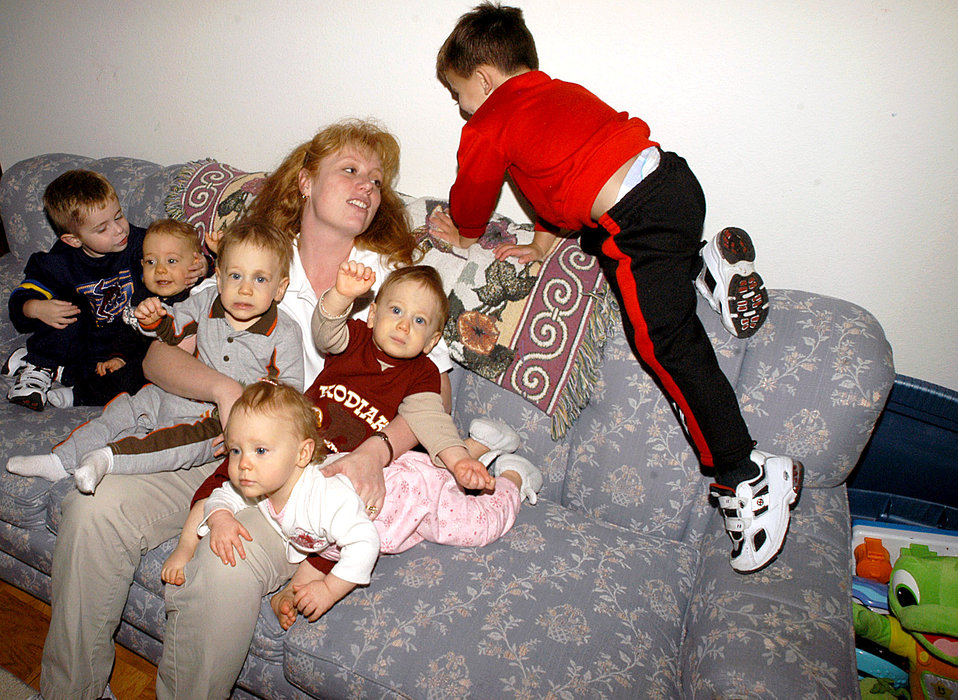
Four of a kind makes 'six-pack' for Edwards family

EDWARDS AIR FORCE BASE, Calif. -- Jackie Kearl tries to get her children together for a group photo here. They are (from left) 3-year-old Hunter, 1-year-olds Bryan, Jayson, Cassie and Nathan, and 3-year-old Tanner Kearl. Mrs. Kearl is married to Capt. Jay Kearl of the U.S. Air Force Test Pilot School.